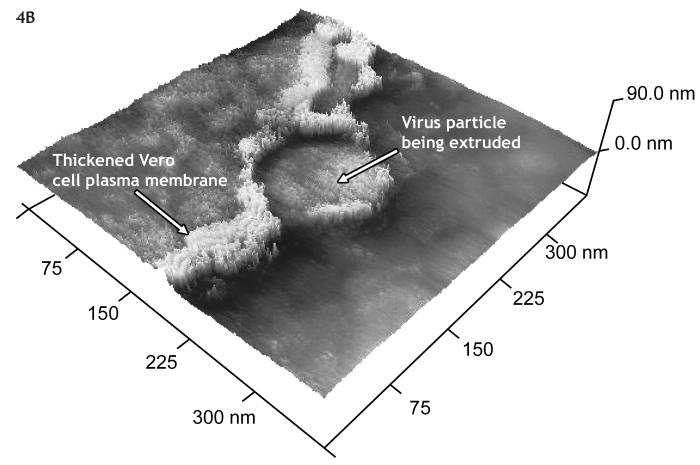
This three-dimensional reconstruction shows that the virus particle was extruded from a much-thickened cell periphery.